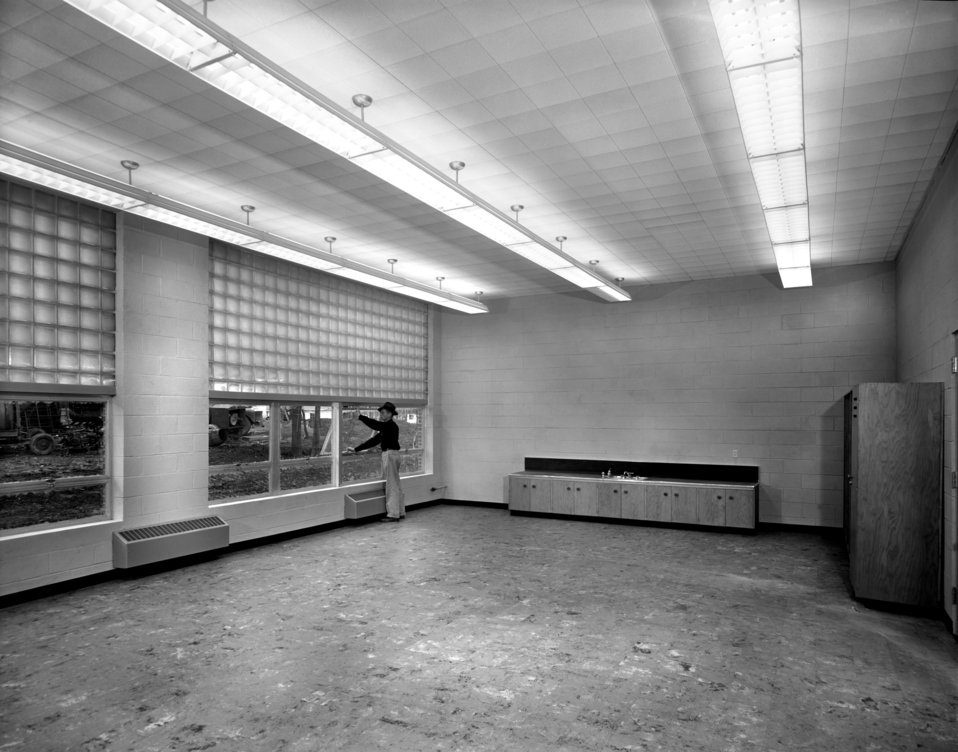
Elementry School Neighborhood 11 Inside Oak Ridge 1949

5764-4 DOE photo Ed Westcott 11-25-1949 Oak Ridge Tennessee